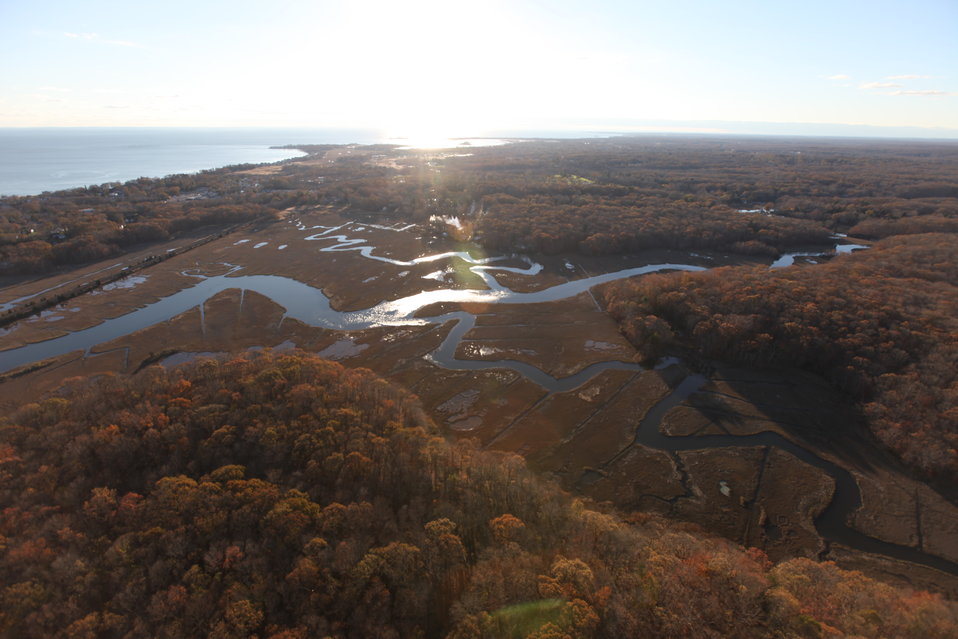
Stewart B. McKinney National Wildlife Refuge (CT)

Aerial view of marsh at Stewart B. McKinney National Wildlife Refuge in aftermath of storm Sandy.